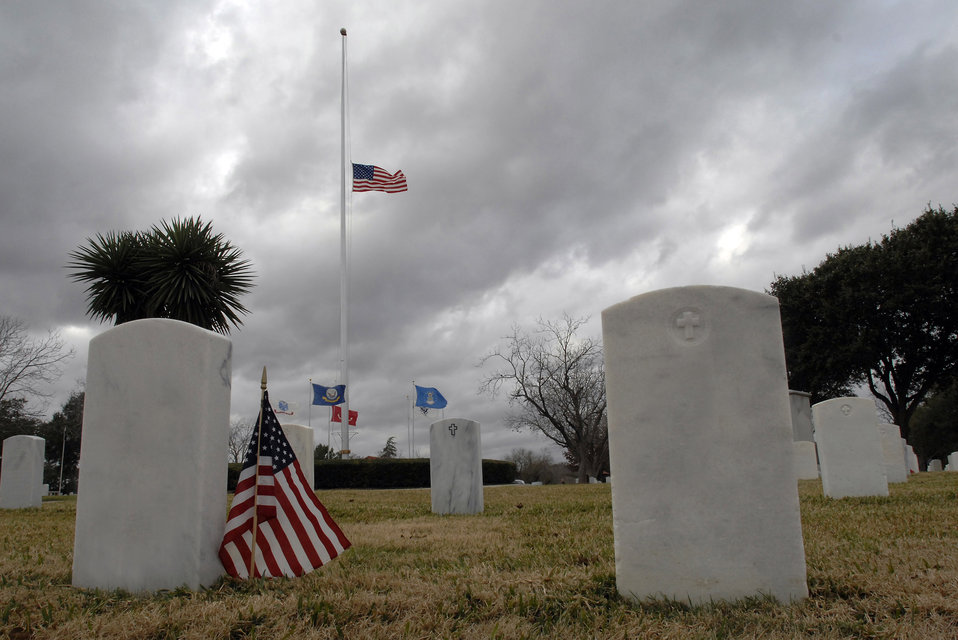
Honoring President Ford

In honor of former President Gerald Ford, who passed away Dec. 26, an American flag flies at half staff Dec. 28 at Fort Sam Houston Cemetery in San Antonio. President Ford's final resting place will be on the grounds of the Gerald R. Ford Presidential Museum in Grand Rapids, Mich., the president's hometown.